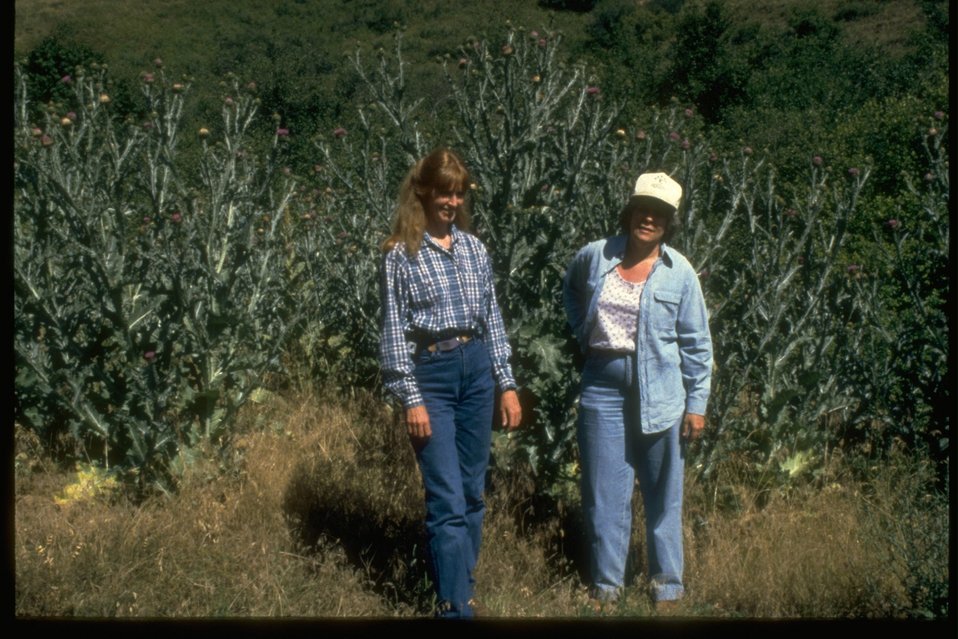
Scotch Thistle at the Garden Creek Preserve. (The Nature Conservancy)